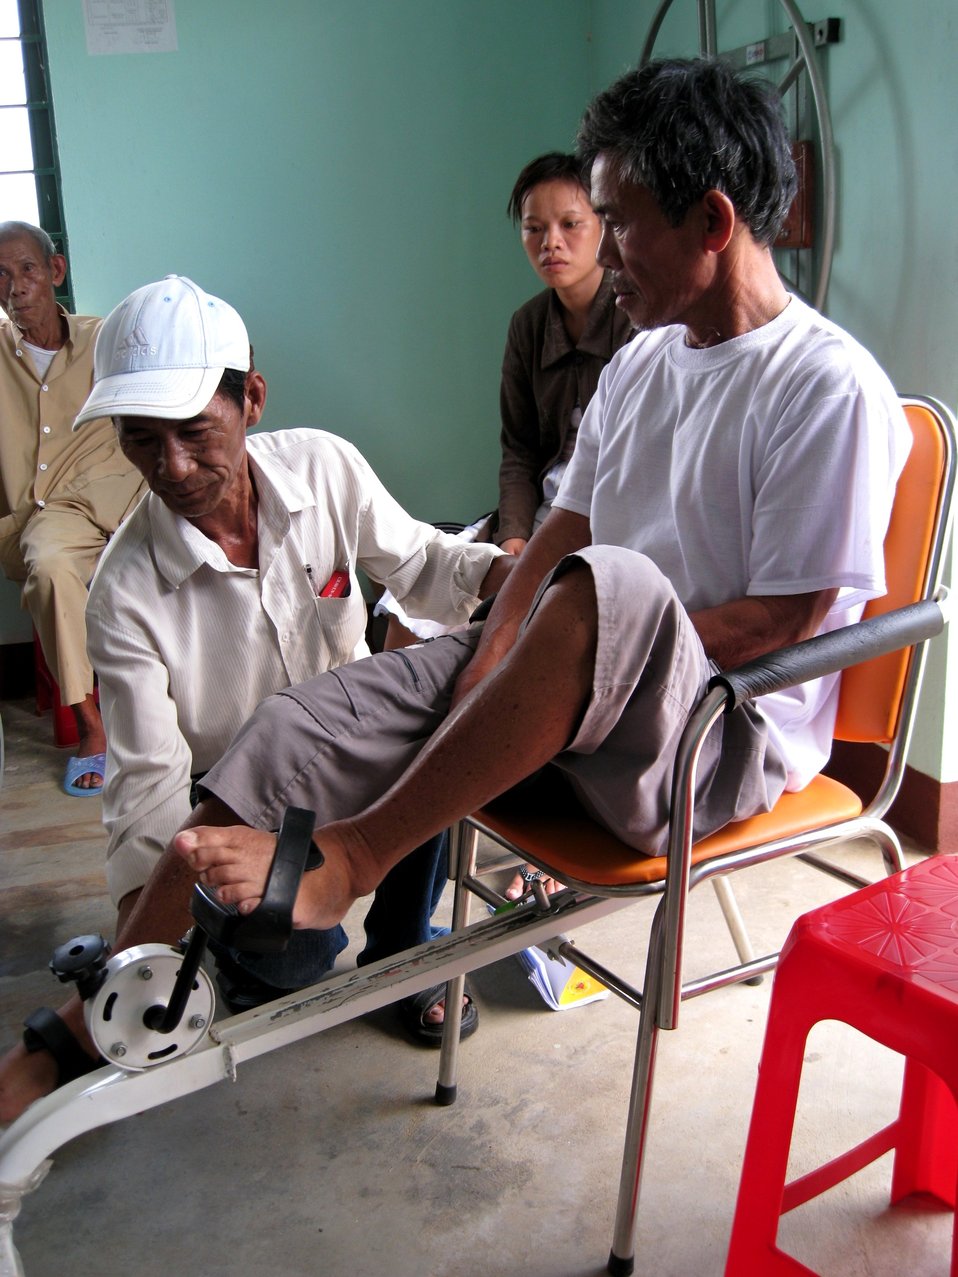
USAID supports a community rehabilitation unit in Danang.

Danang, June 10, 2013.